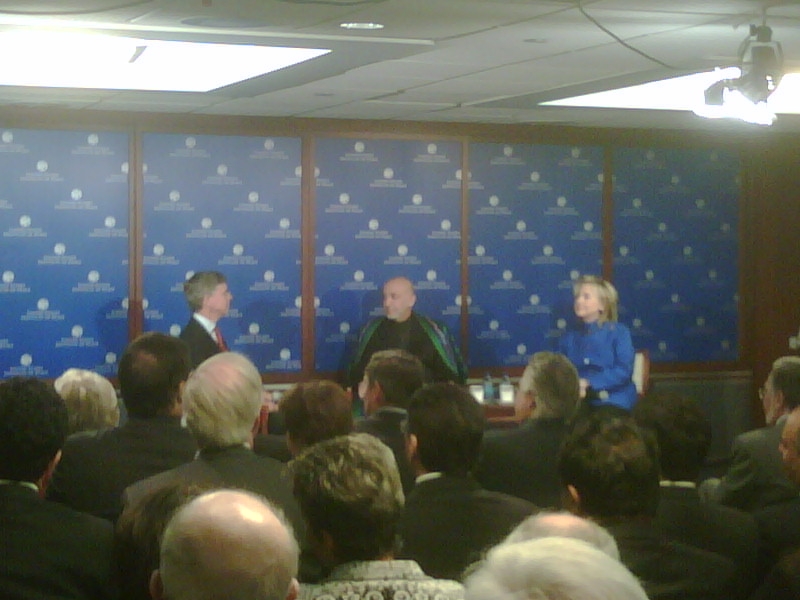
Secretary Clinton and Afghan President Karzai Deliver Remarks

U.S. Secretary of State Hillary Rodham Clinton and President Hamid Karzai of Afghanistan deliver remarks at U.S. Institute of Peace, Washington, D.C., May 13, 2010.